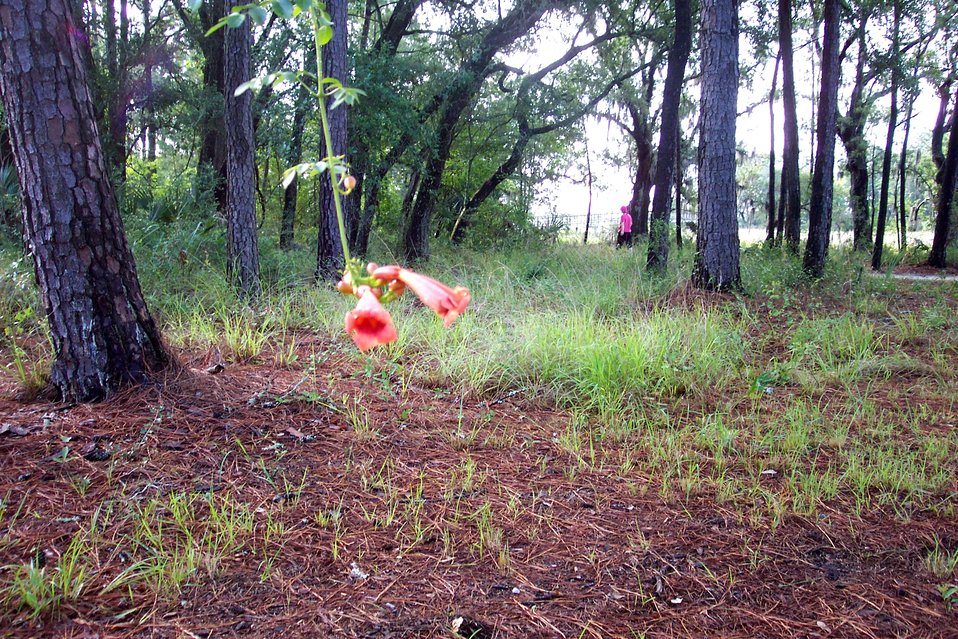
Vine with flowers hanging from tree on Daniel Island.